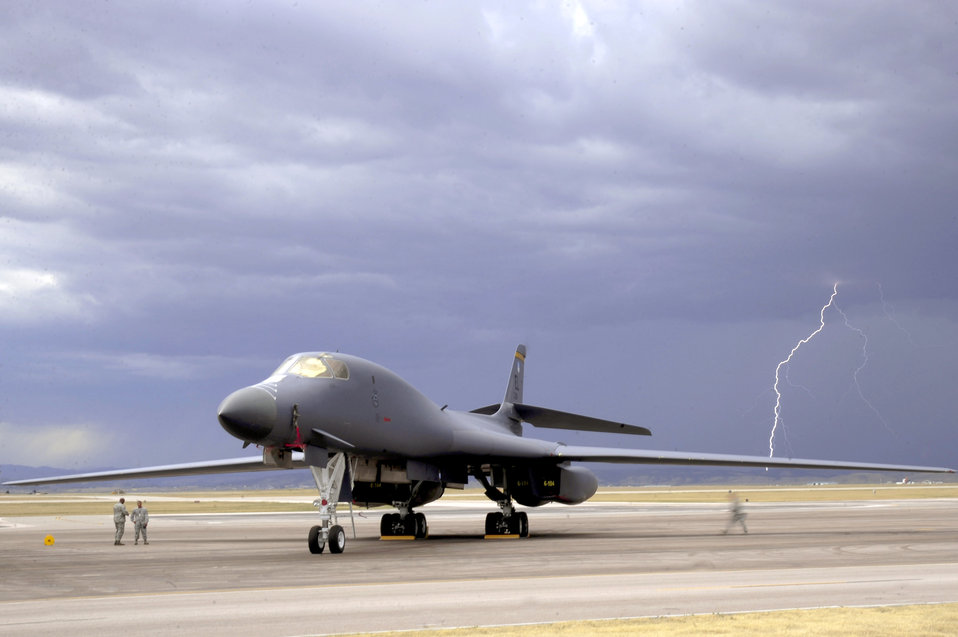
Marathon office releases official plane for 2011 race

Officials from the Air Force Marathon office recently named the B-1B Lancer as the official plane for the 2011 Air Force Marathon.